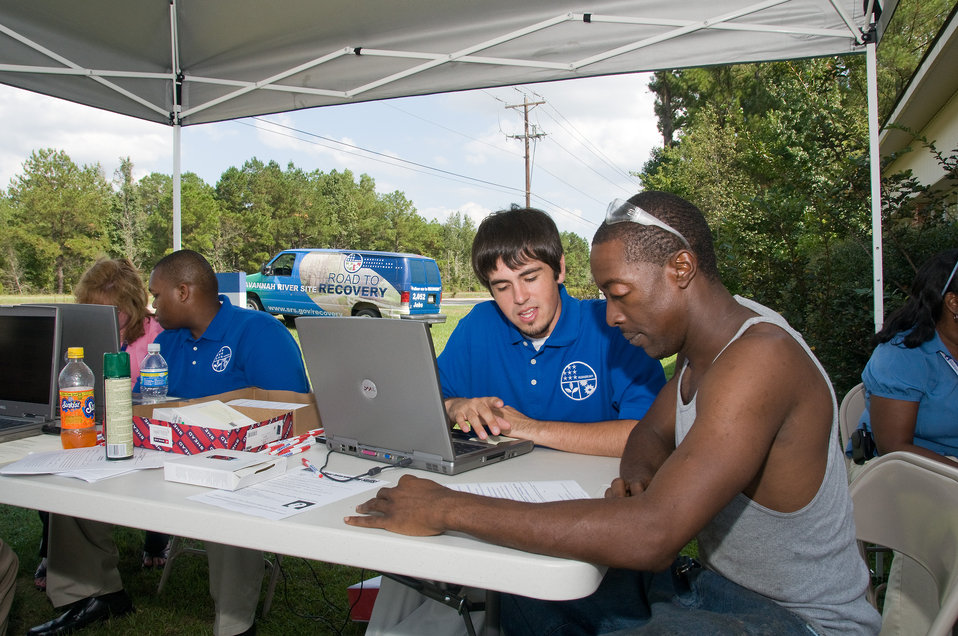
SRS Job Fair

Savannah River Site has attracted tens of thousands of South Carolina and Georiga residents through their job fairs.